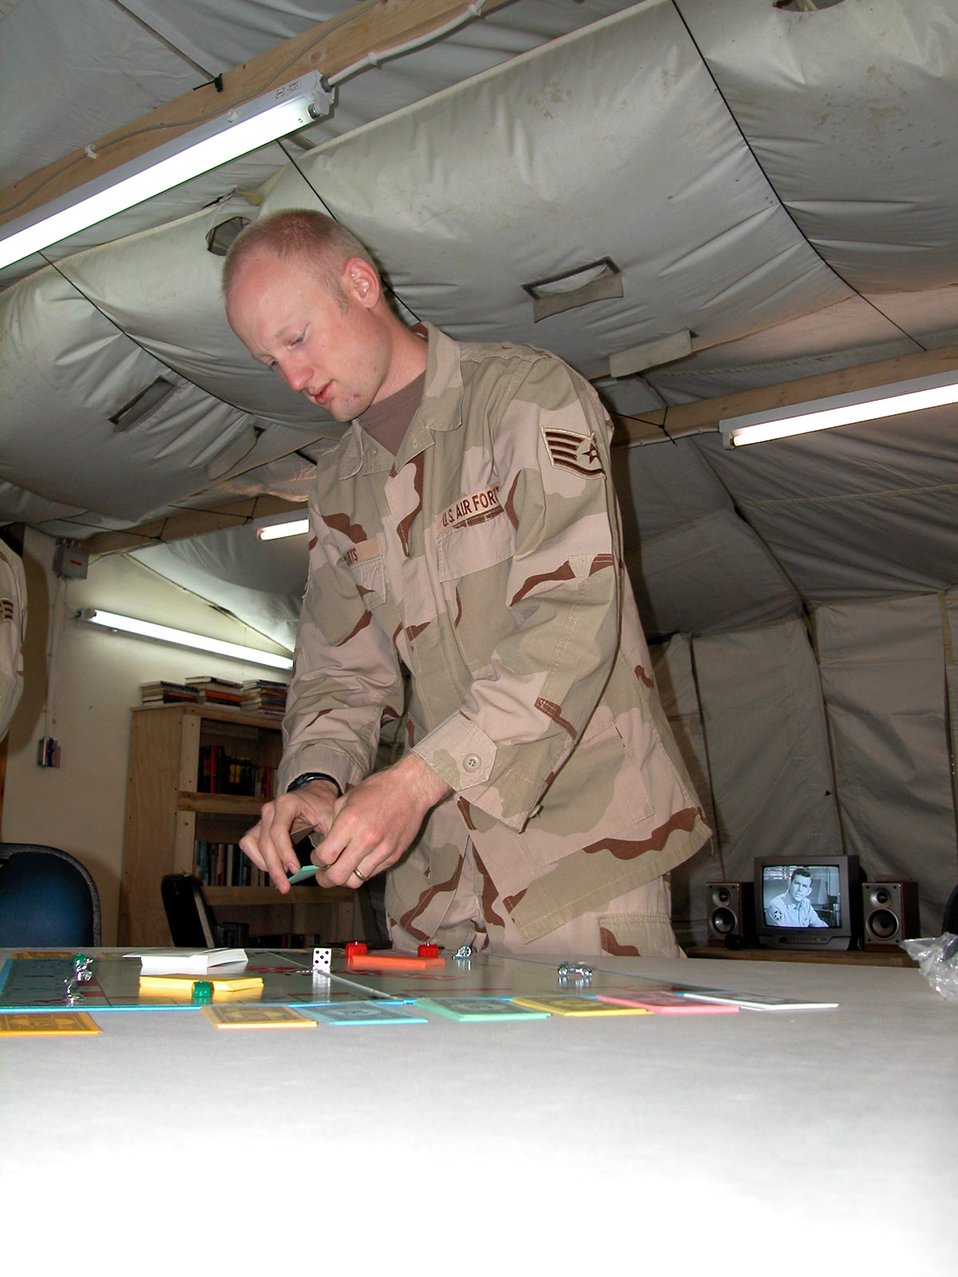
Balad chapel staff opens center in fallen pilot's honor

Staff Sgt. Brian Marts sets up a board games available at the new Troy's Place Airmen's Ministry Center May 4 at Balad Air Base, Iraq. The center is named in honor of Maj. Troy Gilbert, an F-16 Fighting Falcon pilot from Luke Air Force Base, Ariz., deployed to Balad AB, who died supporting U.S. ground forces pinned down by anti-Iraqi forces Nov. 27, 2006. The Airmen's Ministry Center is a place where Airmen can spend time in a quiet atmosphere. Sergeant Marts is a wing chaplain assistant.